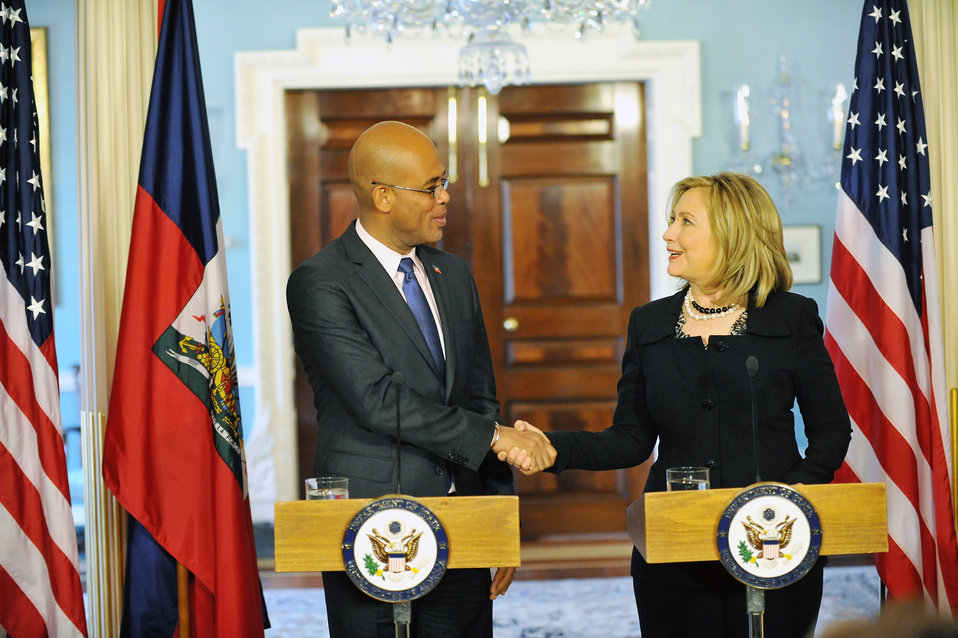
Secretary Clinton Shakes Hands With Haitian President-Elect Martelly

U.S. Secretary of State Hillary Rodham Clinton shakes hands with Haitian President-elect Michel Martelly after their joint press conference, at the U.S. Department of State in Washington, D.C., on April 20, 2011.